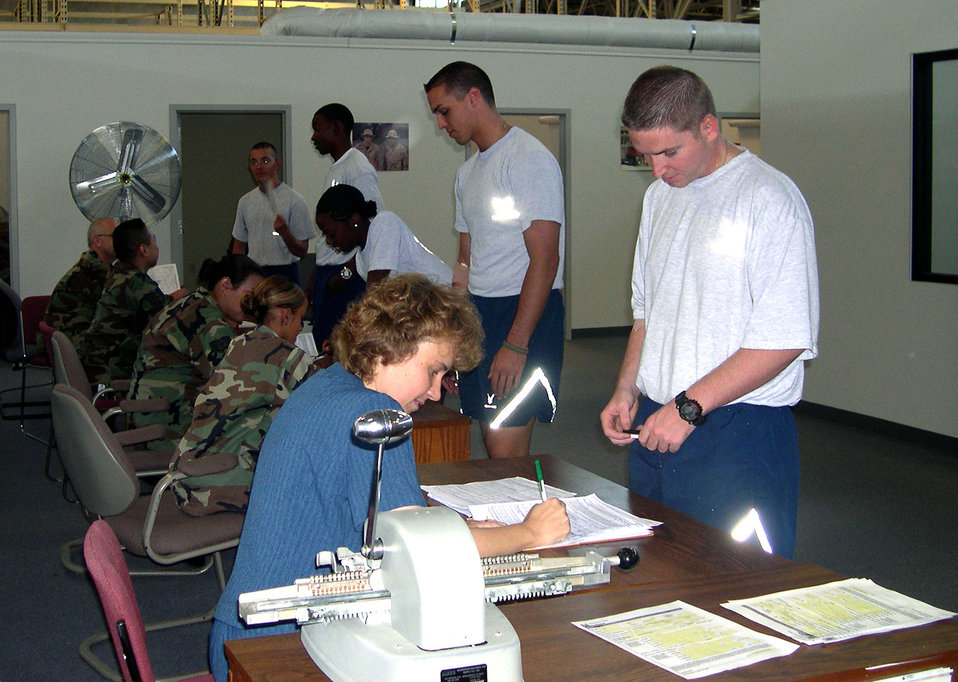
Support agencies ease deployed Airmen's return

Airmen process through a deployment reintegration line at Laughlin Air Force Base, Texas, Sept. 25 after returning from a deployment in Southwest Asia Sept. 24. The reintegration fulfills the Air Force intent of ensuring returning Airmen are given the tools they need for a smooth transition back into family life and responsibilities after performing duties in deployed combat-zone locations.